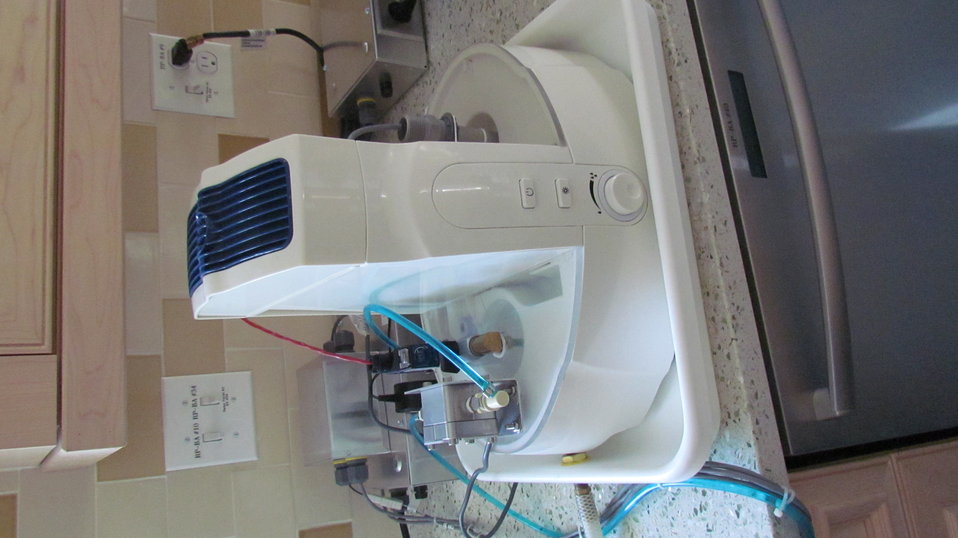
Modified humidifier that will be used to simulate the latent heat generated by the virtual family. There are two of these units. I located in the downstairs and one upstairs.